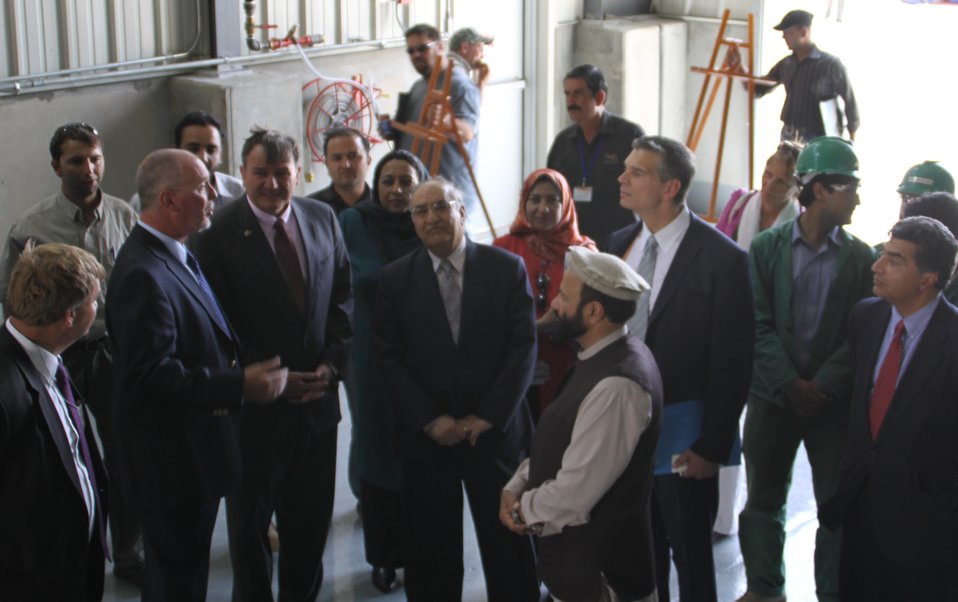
105 MW Tarakhil Power Plant Handover